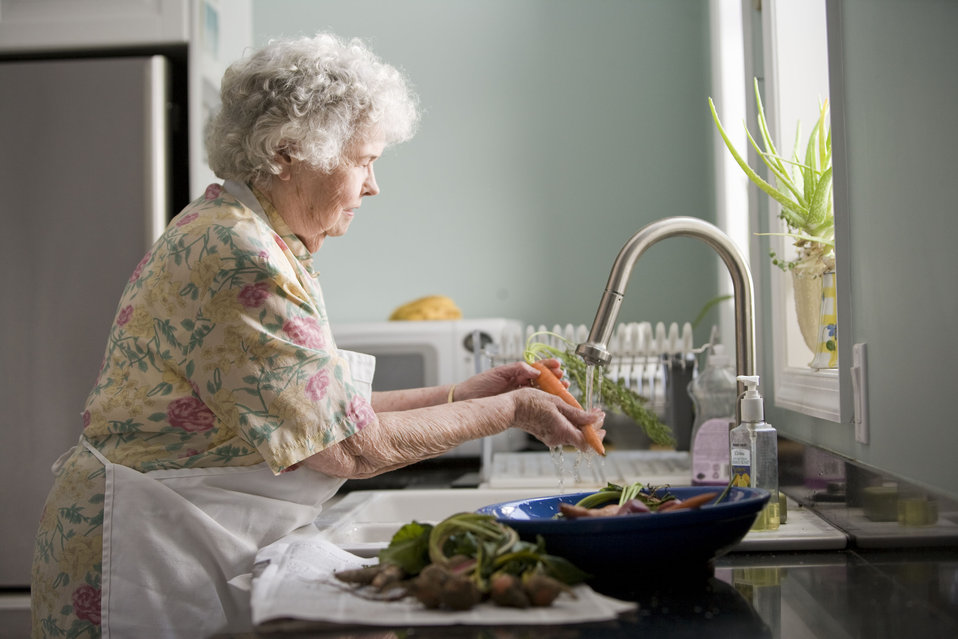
Properly cleaning fresh, uncooked produce is a must when preparing a meal, and with this in mind, the elderly woman pictured here was doing just that, as she was thoroughly cleaning a number of carrots and radishes. Note that there was soil still clinging to the tubers, which would have to be entirely removed using vigorous scrubbing with soapy warm water. Cleaning also will remove environmental pollutants, such pesticides from the foods' surfaces.